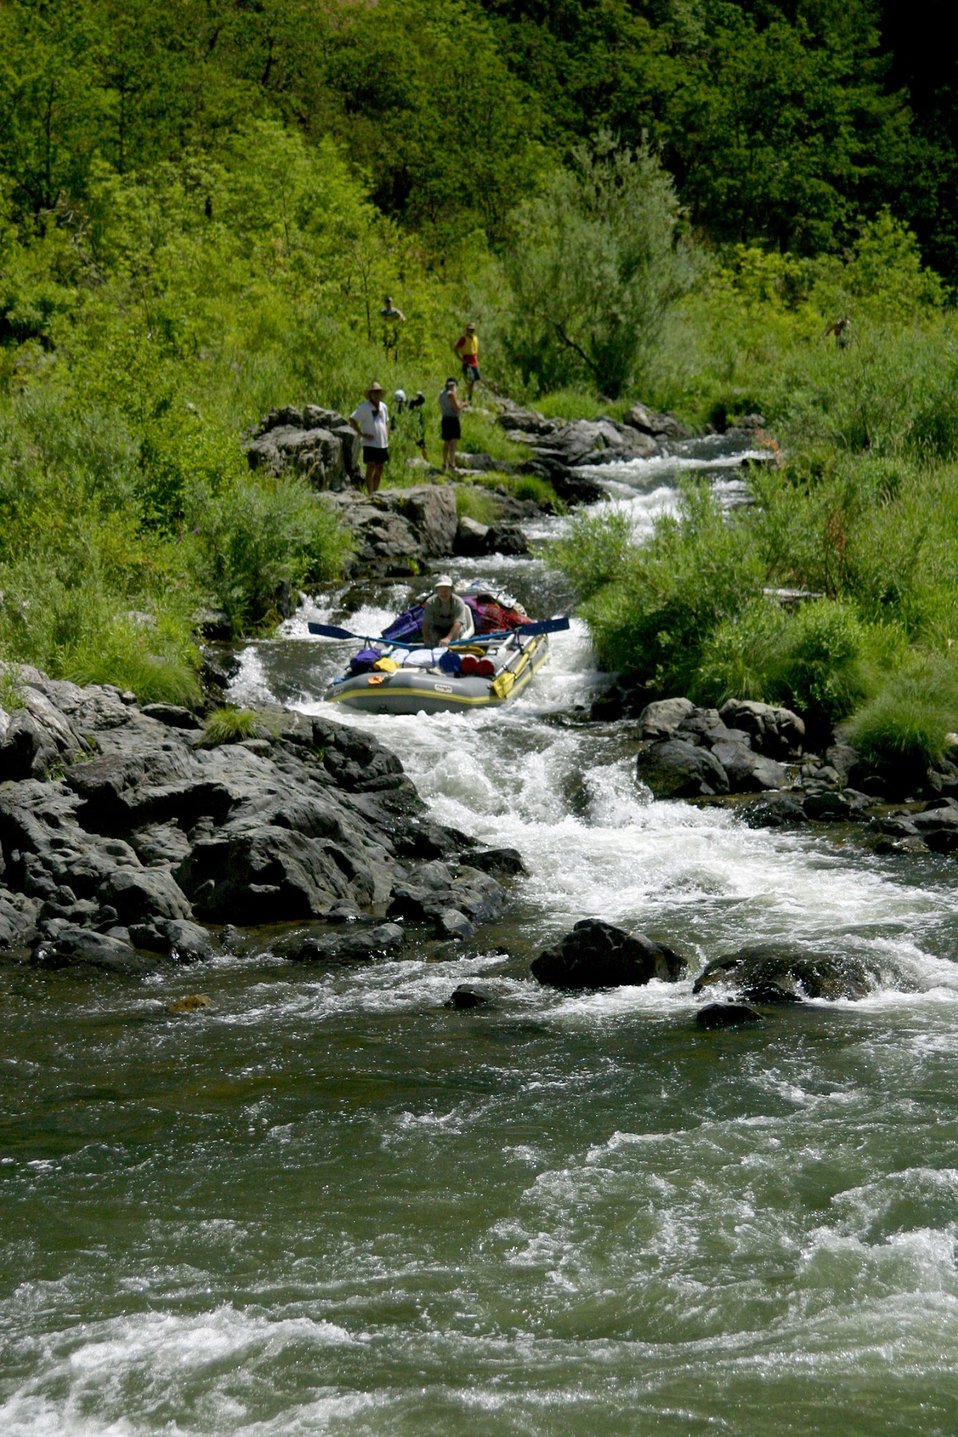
Rainie Falls Fish Ladder